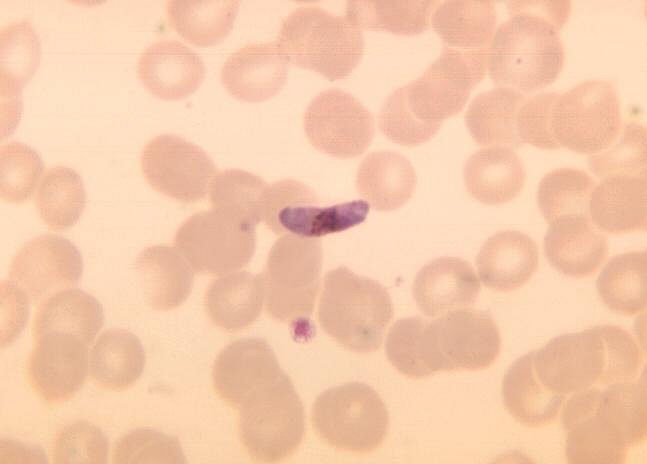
Plasmodium falciparum, macrogametocyte.